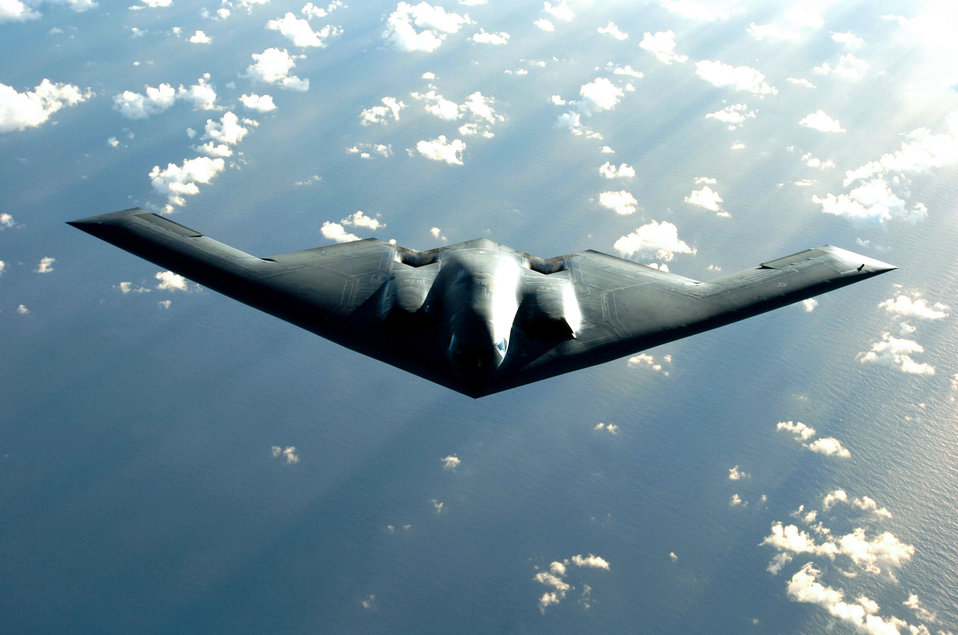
Fuel the Spirit

OVER THE PACIFIC OCEAN -- A B-2 Spirit bomber soars during a deployment to Andersen Air Force Base, Guam. The bomber deployed as part of a rotation that has provided U.S. Pacific Command officials a continuous bomber presence in the Asia-Pacific region, enhancing regional security and the U.S. commitment to the Western Pacific. It is from the 509th Bomb Wing at Whiteman AFB, Mo.